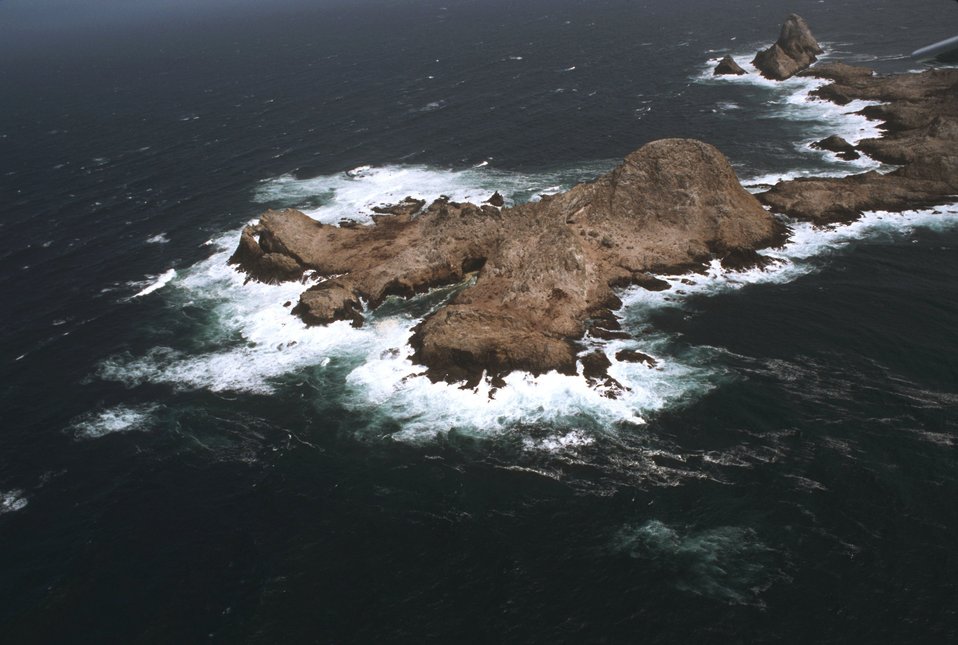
Aerial views of the wind-swept sea-swept Farallons, a virtual wilderness less than thirty miles from downtown San Francisco. Photo #4.